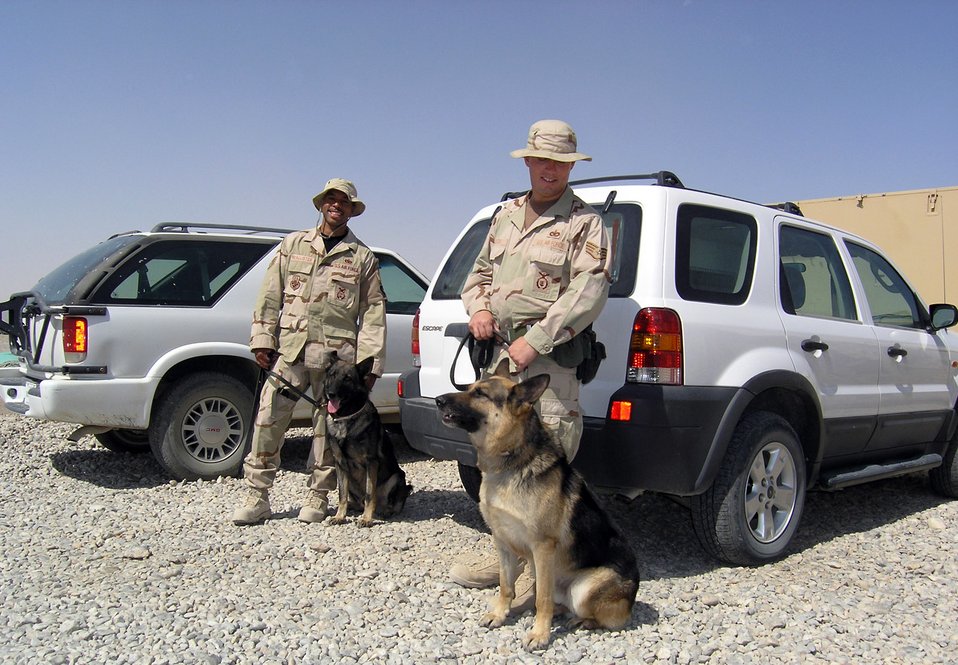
Loyal partners sniff out trouble in Iraq

ALI BASE, Iraq -- (From left) Staff Sgt. Tyreese McAllister, Ori, Staff Sgt. Jake Bolton and Kevin wait by their vehicles here. The military working dog teams help provide full-spectrum security for deployed forces. The Airmen and their dogs are assigned to the 407th Expeditionary Security Forces Squadron. Sergeant McAllister and Ori are deployed from Langley Air Force Base, Va., and Sergeant Bolton and Kevin are deployed from Whiteman AFB, Mo.